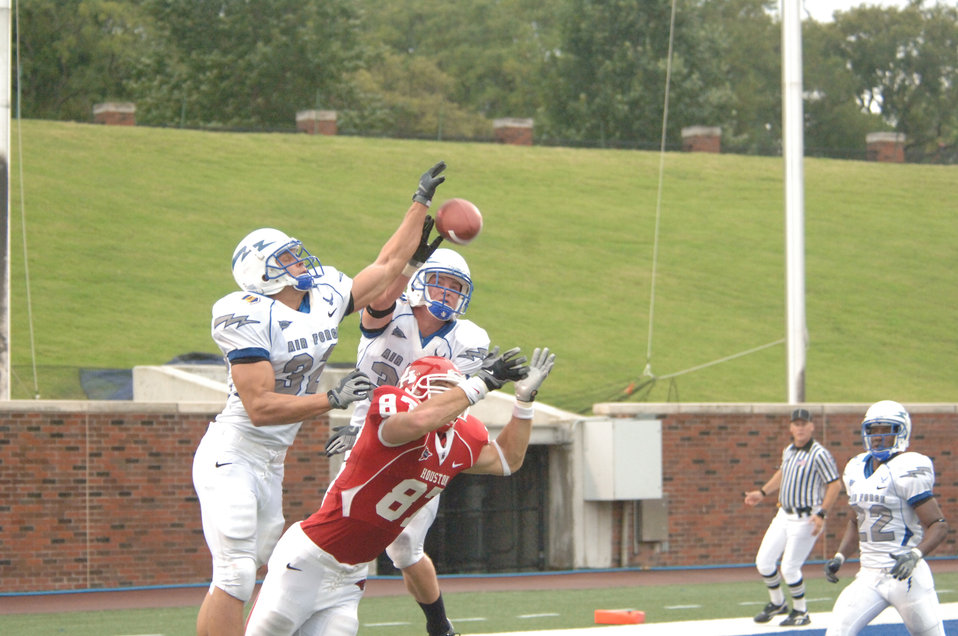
Football: Falcons hold off Cougars in wake of Hurricane Ike

U.S. Air Force Academy linebacker Hunter Altman and safety Luke Yeager combine to bat a pass away from Houston wide receiver Mark Hafner to help stifle a Houston comeback Sept. 13 in Dallas. Despite allowing 534 yards of offense, the Falcons managed to squeak out a 31-28 win and advance to 3-0 for the season.